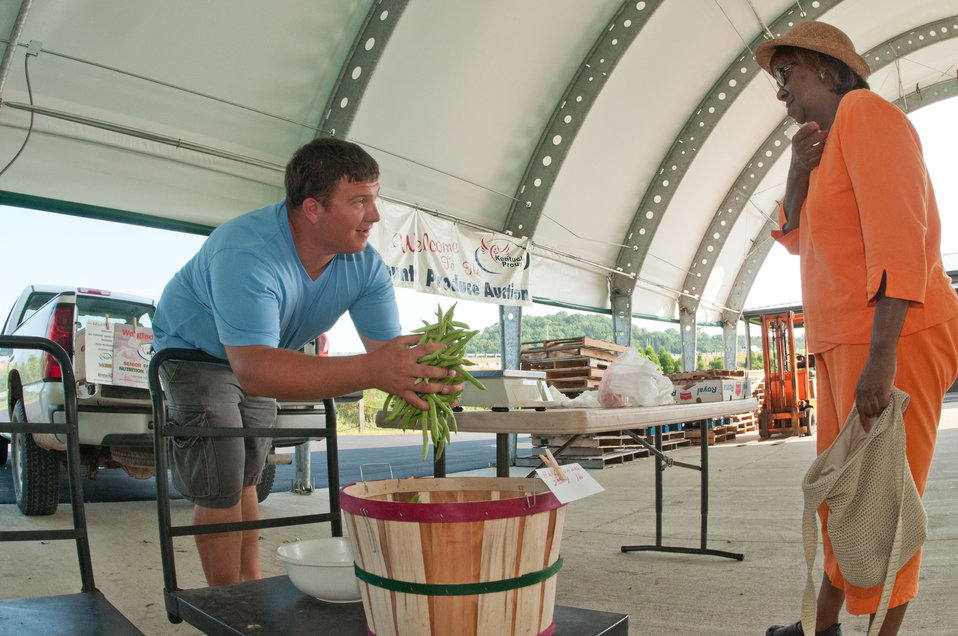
Shandy Karrick (left) gathers a bundle of Half Runner heirloom beans for Janice Potts (right) who was using her Senior Farmer's Market Nutrition Program check at the Bath County Agricultural Education and Marketing Center, Owingsville, KY, on Friday, July 15, 2011. By the time Ms. Potts left, her four dollar check bought $20 dollars of produce. The Center was the recipient of a $400,000 Rural Business Enterprise Grant. It has given farmers and producers from Bath and surrounding counties the opportunity to manufacture and market their locally grown and locally produced value-added and “Kentucky Proud” branded products, including but not limited to, fresh produce, artisan crafts and specialty food products. The Center is open year-round and allow residents to sell products in four different retail categories, including Kentucky products, regional crafts, “green” groceries and bakery/deli. Several producers expressed their gratitude for Rural Development’s assistance in making the center a reality. The project was made possible through funding the American Recovery and Reinvestment Act of 2009 enacted by the 111th United States Congress in February 2009 and signed into law on February 17, 2009, by President Barack Obama.